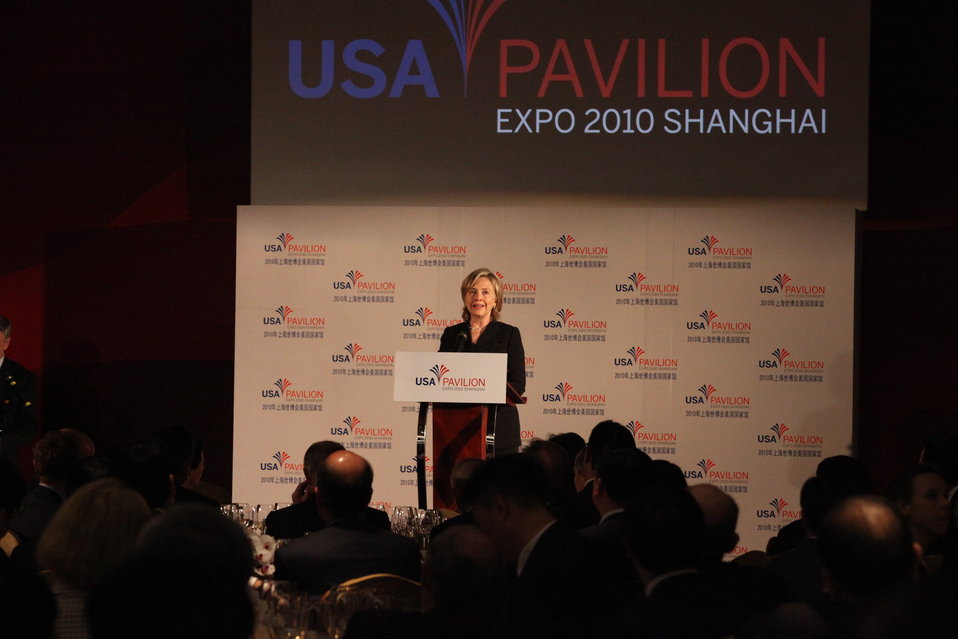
Secretary Clinton Speaks at the USA Pavilion

U.S. Secretary of State Hillary Rodham Clinton speaks at a dinner held at the USA Pavilion to the 2010 Shanghai Expo in Shanghai, China, May 22, 2010.